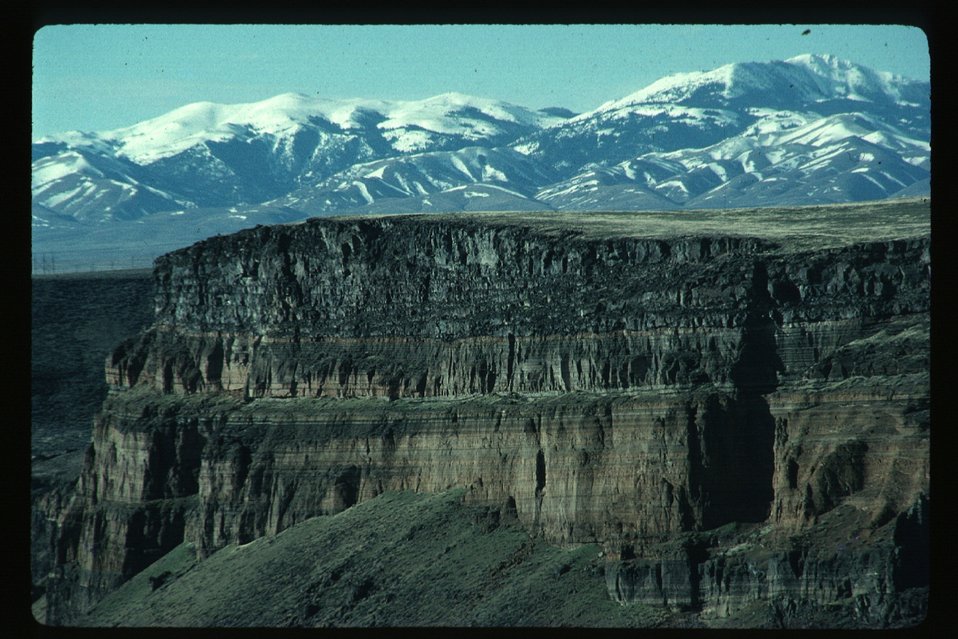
Canyon Cliffs and Owyhee Mountains Snake River Canyon Owyhee Field Office LSRD Lower Snake River District